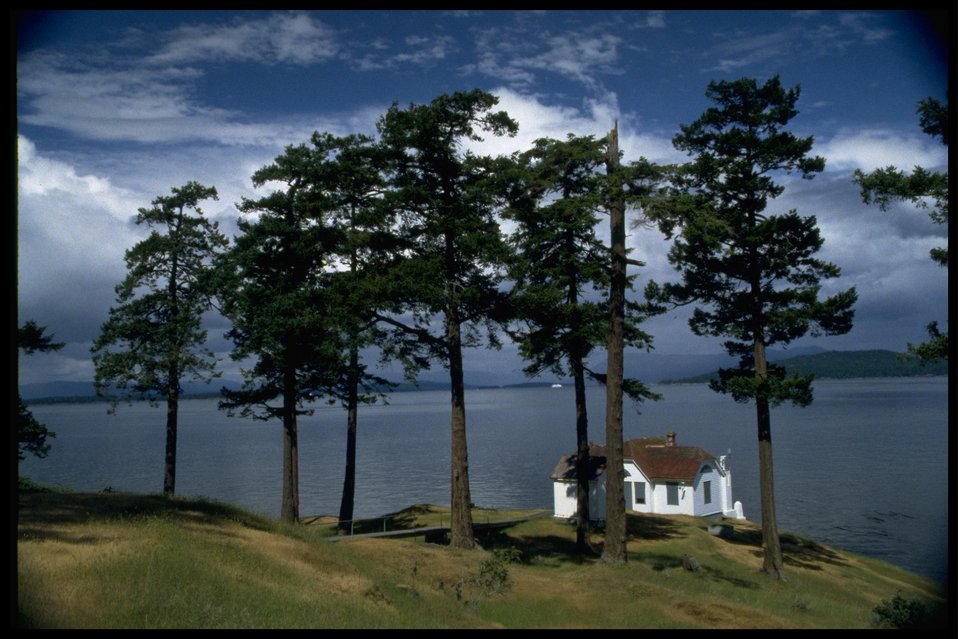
Long shot of the Turn Point lighthouse with trees in the foreground.